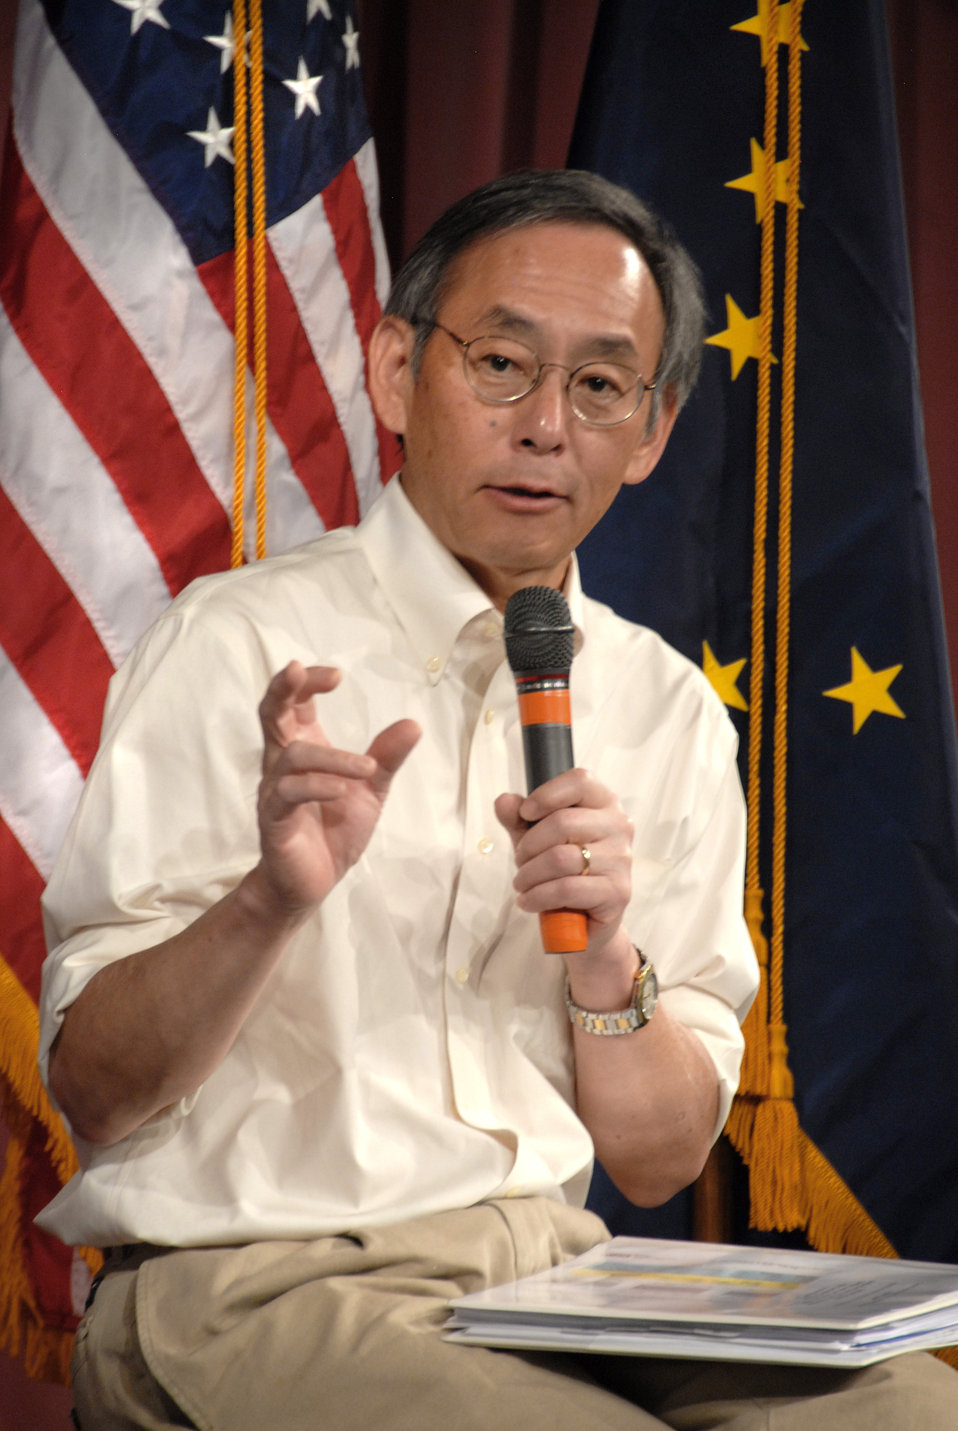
Rural Tour 0116

Rural Tour Alaska Aug 2009